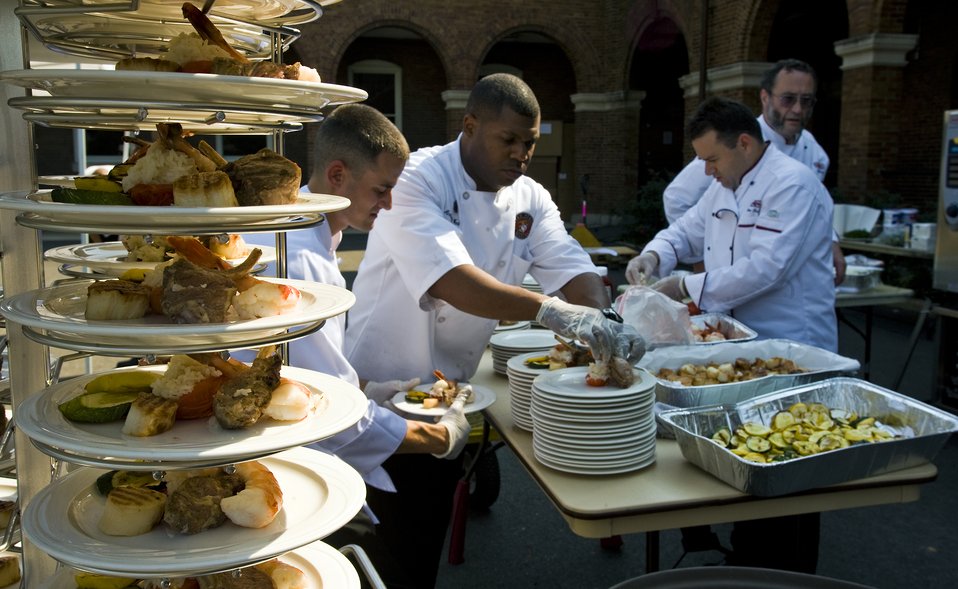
Military chefs to compete in culinary competition

Military food service specialists prepare plates for a kick-off luncheon at the 7th Annual Military Culinary Competition Sept. 24, 2010, in Washington, DC.